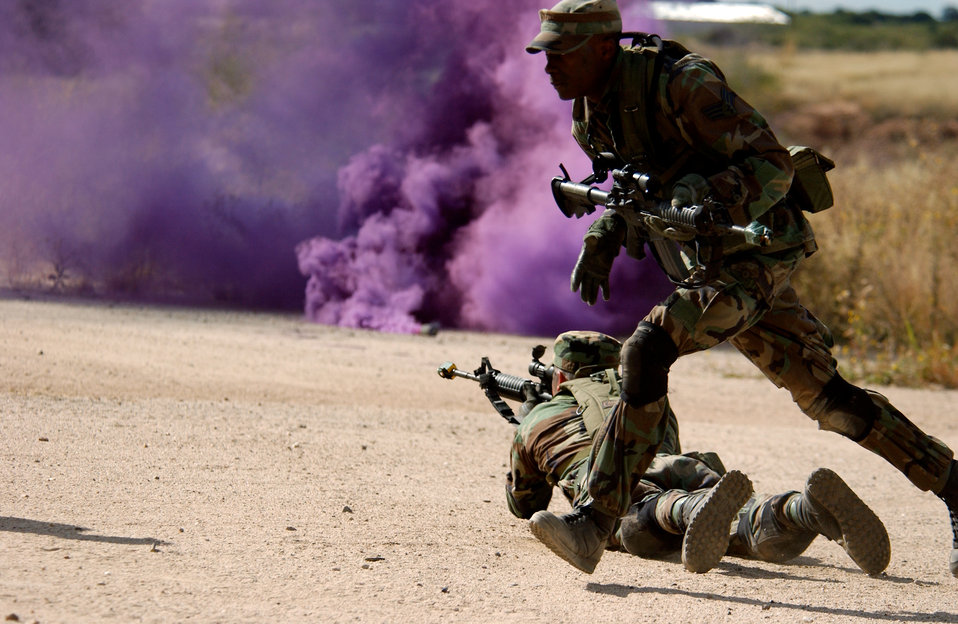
Defender Challenge 2004

FORT HUACHUCA, Ariz. -- Senior Airman Greg Davidson reacts to fire during a tactics training exercise Oct. 13. Members of the U.S. Air Forces in Europe Defender Challenge team are spending three weeks here in preparation for the 2004 Defender Challenge competition. Defender Challenge, held at Lackland Air Force Base, Texas, is a security forces competition. Airman Davidson is assigned to the 48th Security Forces Squadron at Royal Air Force Lakenheath, England.